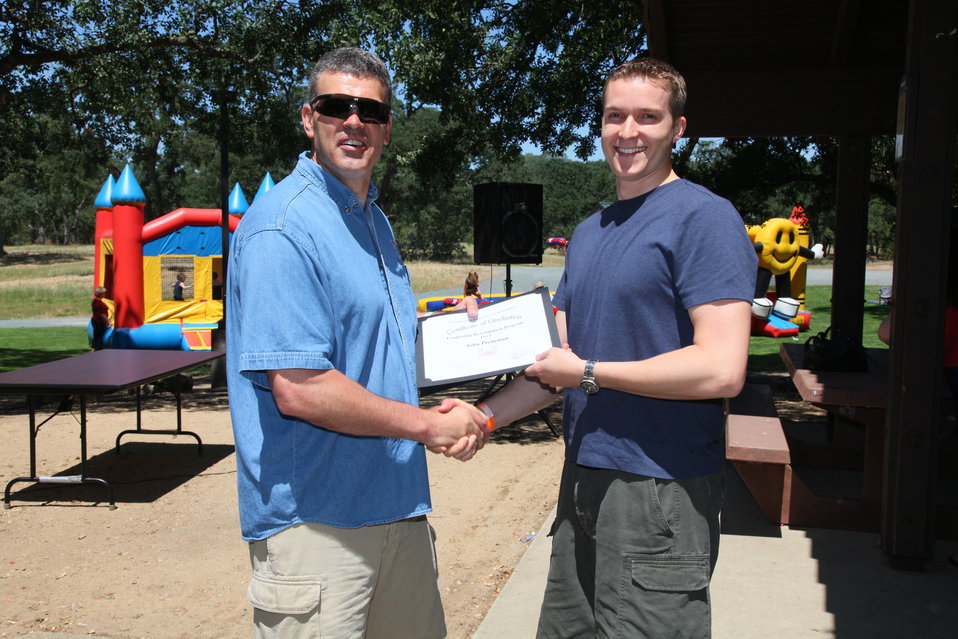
2011 Annual Picnic